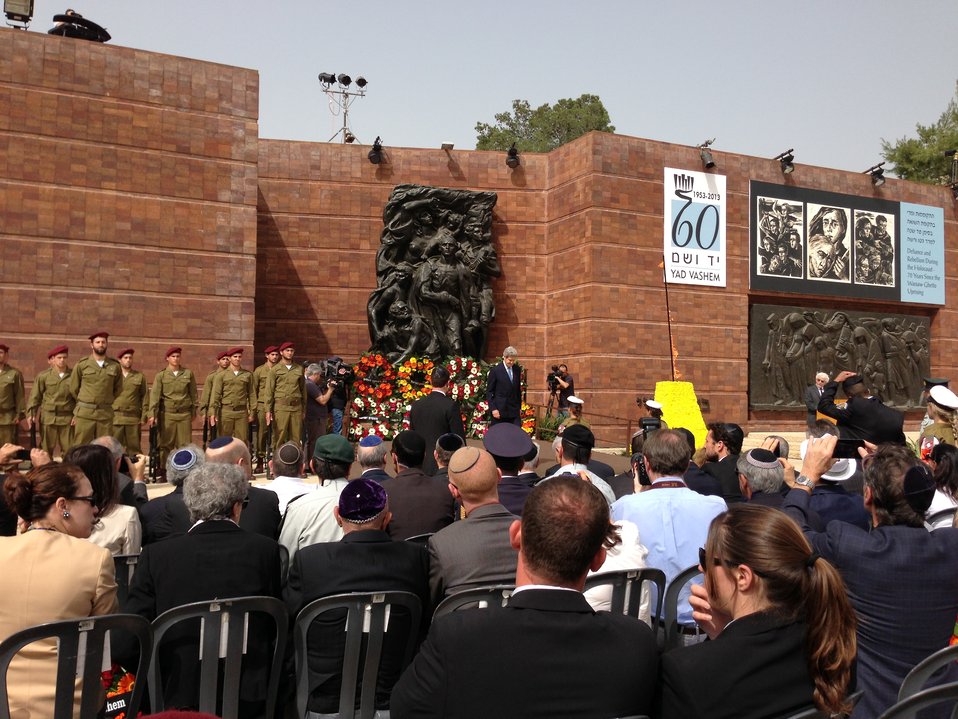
Secretary Kerry Lays a Wreath at Yad Vashem

U.S. Secretary of State John Kerry lays a wreath at Yad Vashem during a ceremony in Jerusalem for Israel's Holocaust Remembrance Day, April 8, 2013.